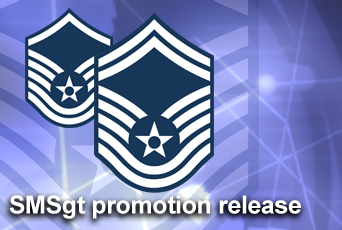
Promotion Release

Air Force officials have selected 1,282 master sergeants for promotion to senior master sergeant. The board, which convened here Feb. 5 to 23, considered 14,626 master sergeants, for an 8.77 percent select rate. Last year's selection rate was 8.63 percent.